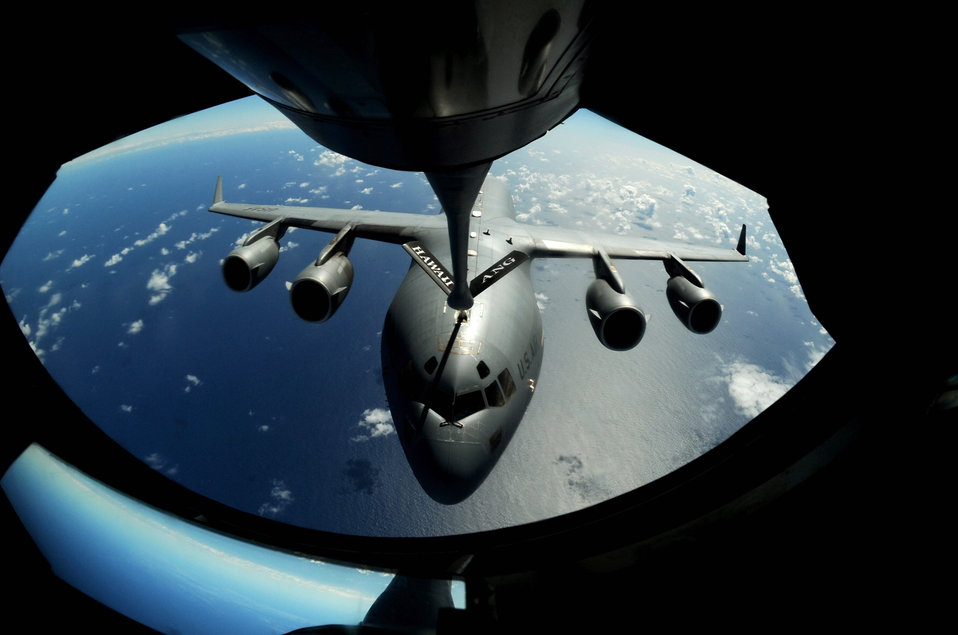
Need fuel now

A C-17 Globemaster III gets ready to receive fuel from a KC-135 Stratotanker Sept. 18, 2010, over the Pacific Ocean during a Total Force partnership mission to Andersen Air Base, Guam. The C-17 is assigned to the 15th Wing at Joint Base Pearl Harbor-Hickam, Hawaii, and the KC-135 is from a Hawaii Air National Guard's 204th Air Refueling Squadron.